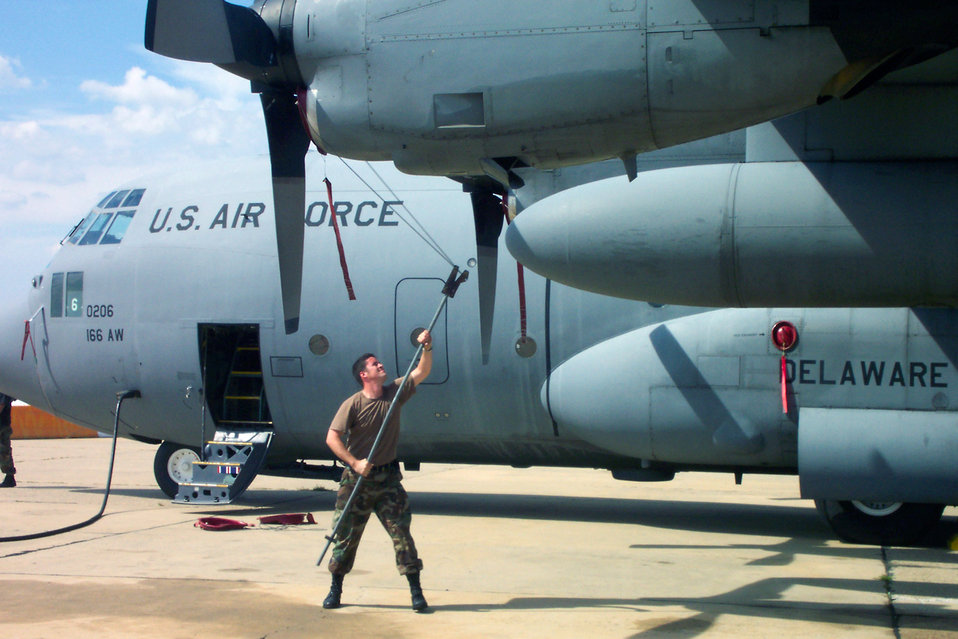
Getting things into their prop-er place

NEW CASTLE, Del. -- Staff Sgt. Caleb Mosher attaches a rope to secure the engine intake cover of a Delaware Air National Guard C-130 Hercules that returned Sept. 3 from a mission supporting Operation Enduring Freedom. Sergeant Mosher is a C-130 aircraft turboprop mechanic and crew chief in the Delaware ANG here.